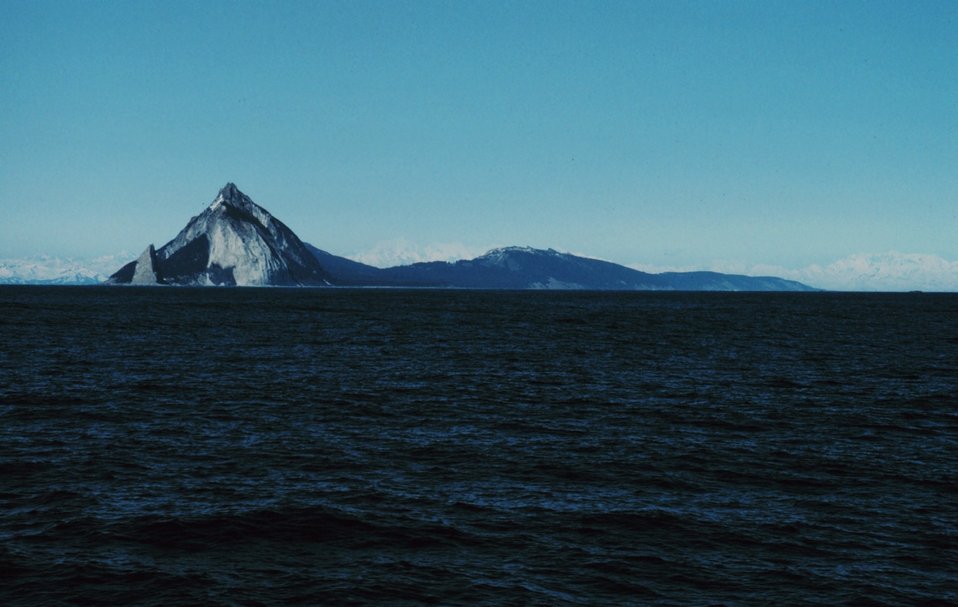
Kayak Island - Cape St. Elias. Distant mountains are at least 60 miles off.